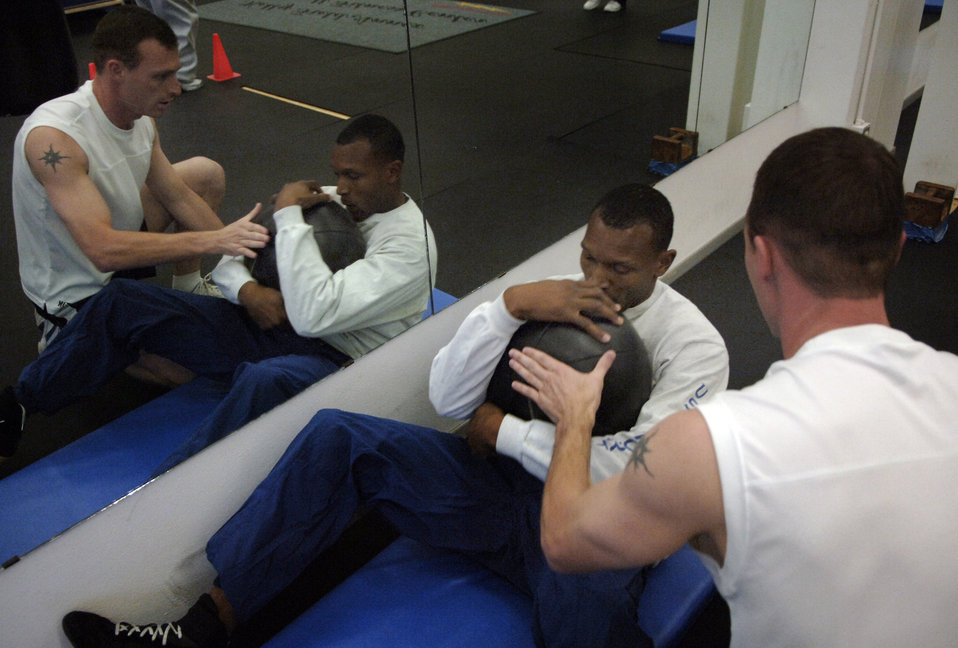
Boxing it out

SAN ANTONIO (AFPN) -- Staff Sgt. Kelvin Leggett receives help from Staff Sgt. John House while performing core training at the Air Force Boxing Training Camp. Twenty-four Airmen our trying out for the nine spots to represent the Air Force at the Armed Forces Tournament. Sergeant Leggett is assigned to the Headquarters Southern Command and Sergeant House is at Lackland Air Force Base, Texas.